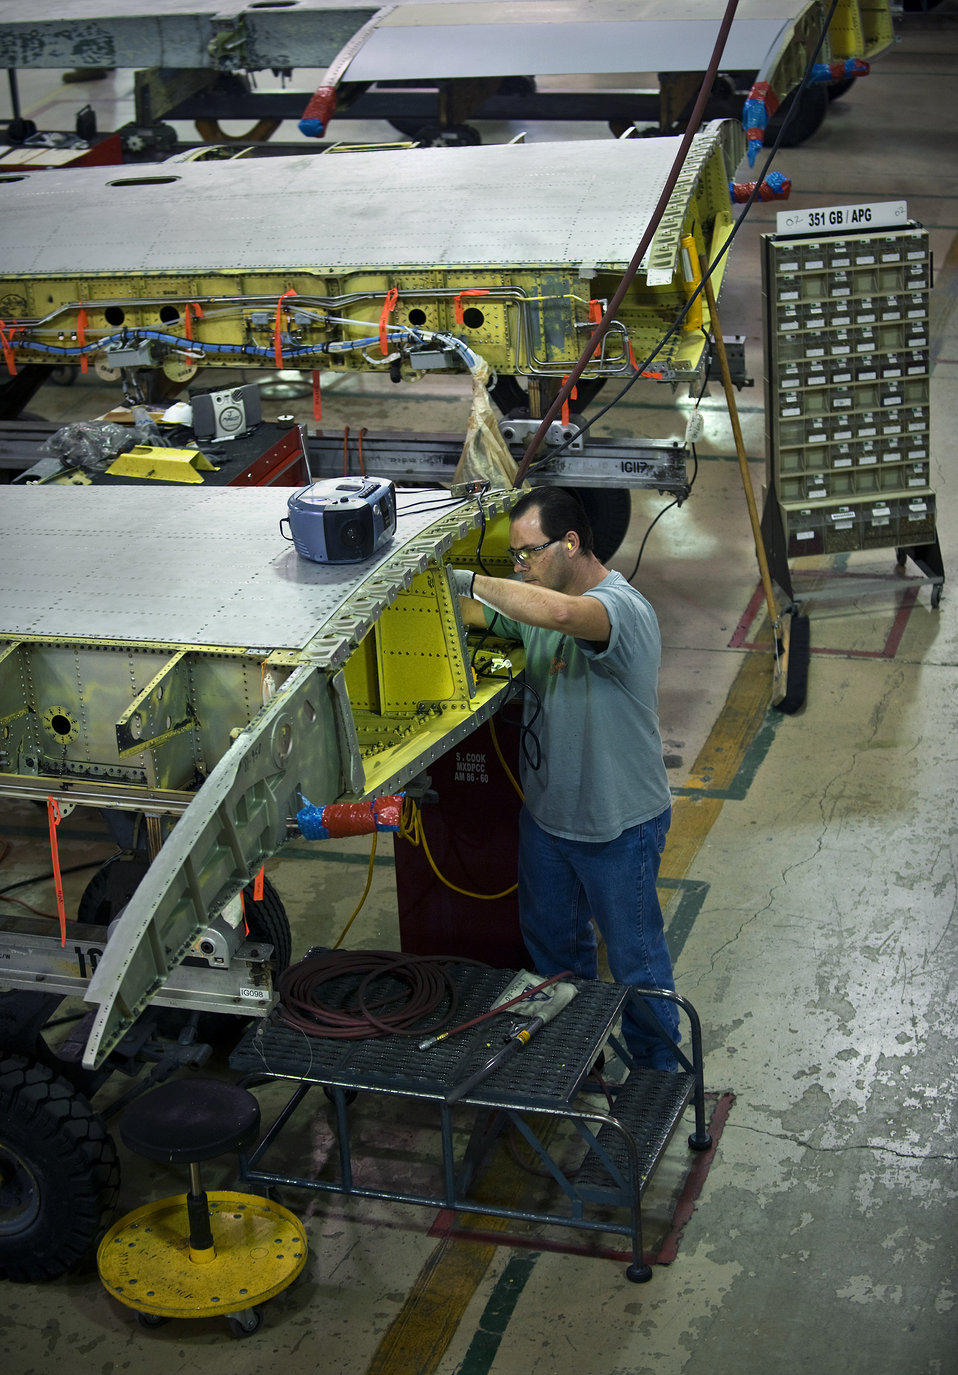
A-10 Hog Up

Steve Cook works on the inner web of an A-10 Thunderbolt II wing Dec. 17, 2009. A-10s are undergoing a wing upgrade at the 309th Aerospace Maintenance and Regeneration Group at Davis-Monthan Air Force Base, Ariz. The upgrade process, affectionately called the